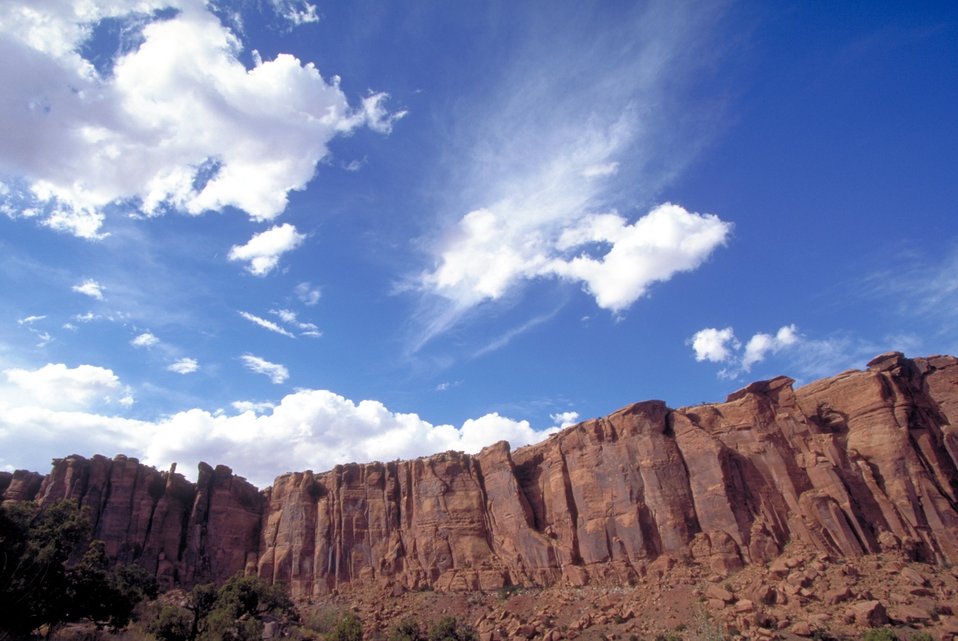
Canyon wall and clouds near Moab, Utah.